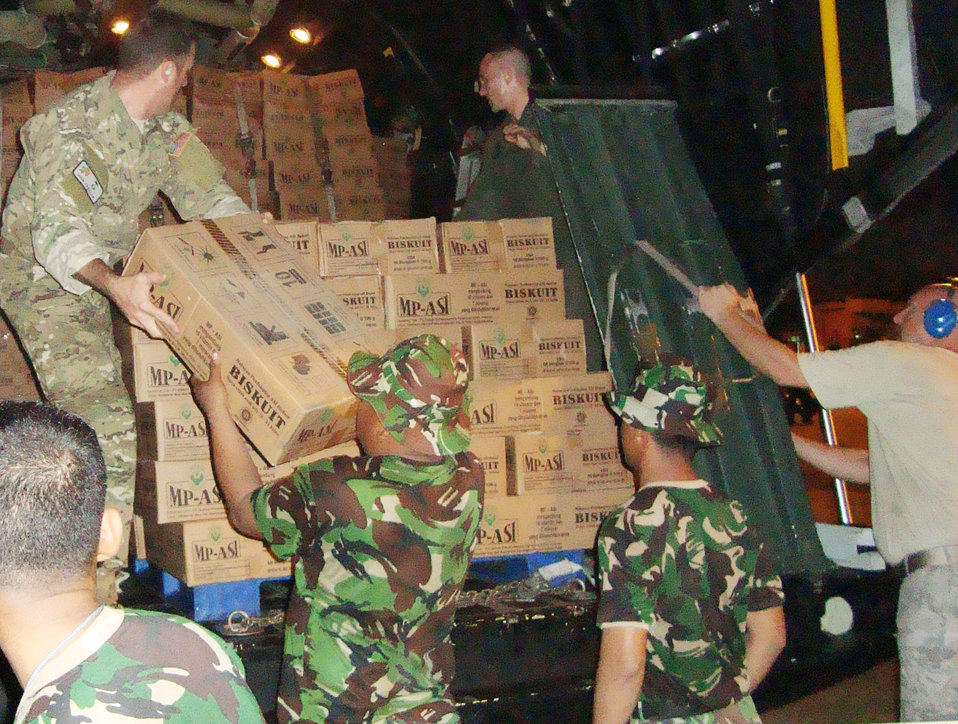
Kadena Airmen aid Indonesian recovery operations

Members of the 353rd Special Operations Group and Indonesian air force members unload relief supplies from a MC-130P Combat Shadow Oct. 2, 2009, at Padang, Indonesia. Members of group immediately started moving emergency response teams, equipment and relief supplies to the Padang area to support humanitarian relief operations after a 7.6 magnitude earthquake and a slightly smaller one struck the area Sept. 29 and Oct. 1. The 353rd SOG Airmen are from Kadena Air Base, Japan.